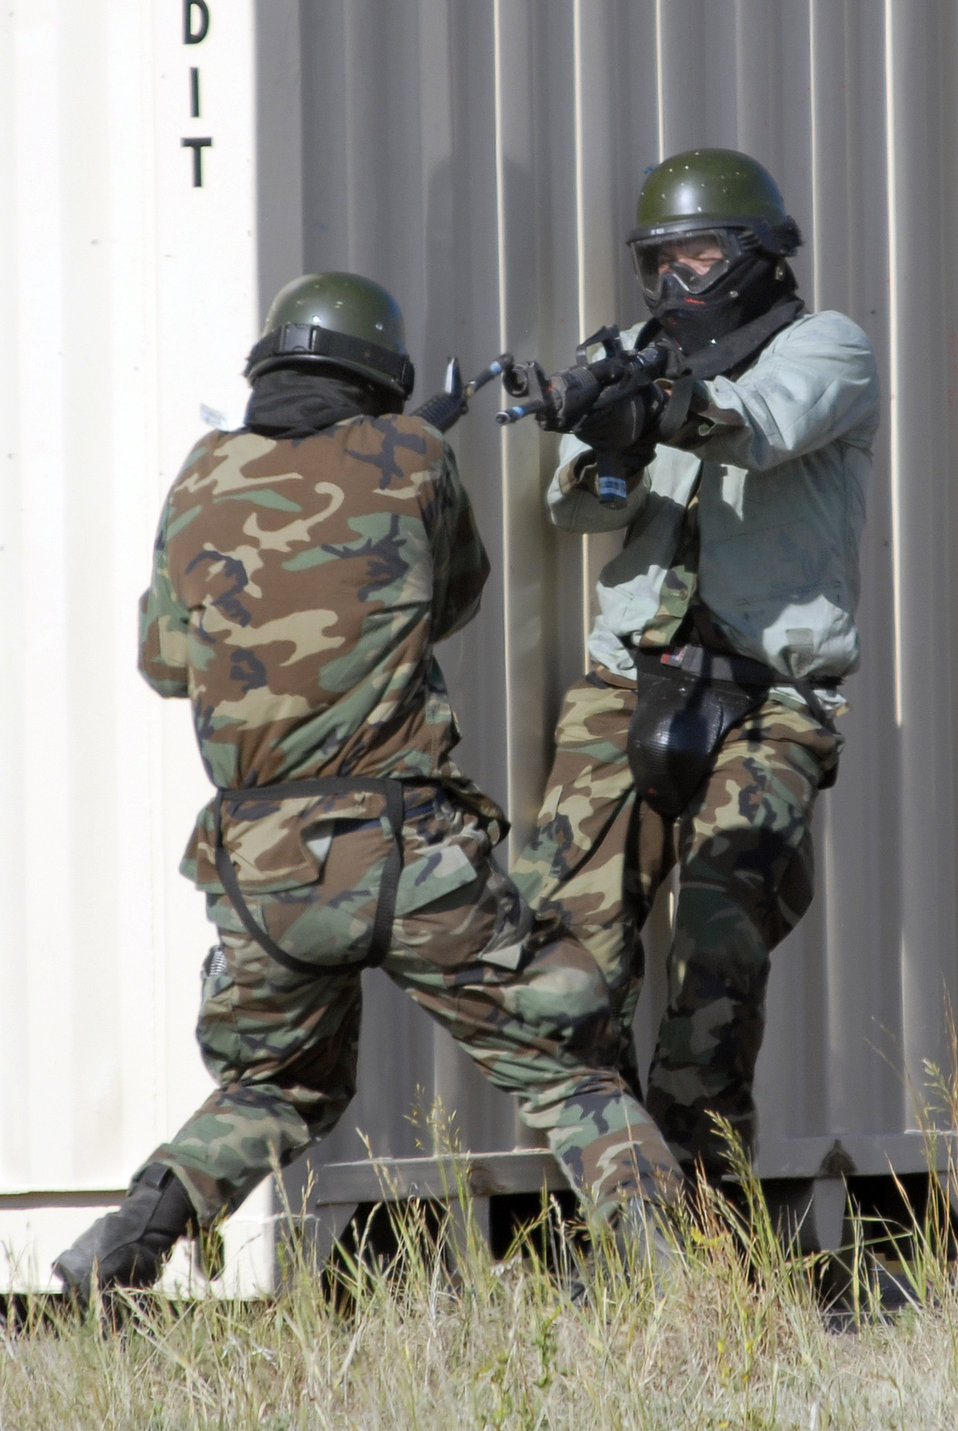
Global Engagement readies Academy cadets for future

A U.S. Air Force Academy cadet (left) is on the offensive against would-be attackers in the Military Operations Urban Terrain village during the 71-day summer training schedule June 19 at the Academy in Colorado. Approximately 1,200 Academy cadets are going through intensive training this summer to be ready to be globally engaged when they graduate.